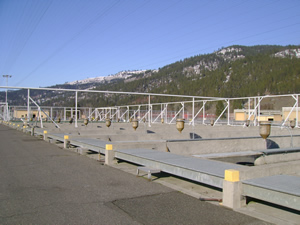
Fish tanks at Dworshak National Fish Hatchery

A side view of the fish tanks at Dworshak National Fish Hatchery.